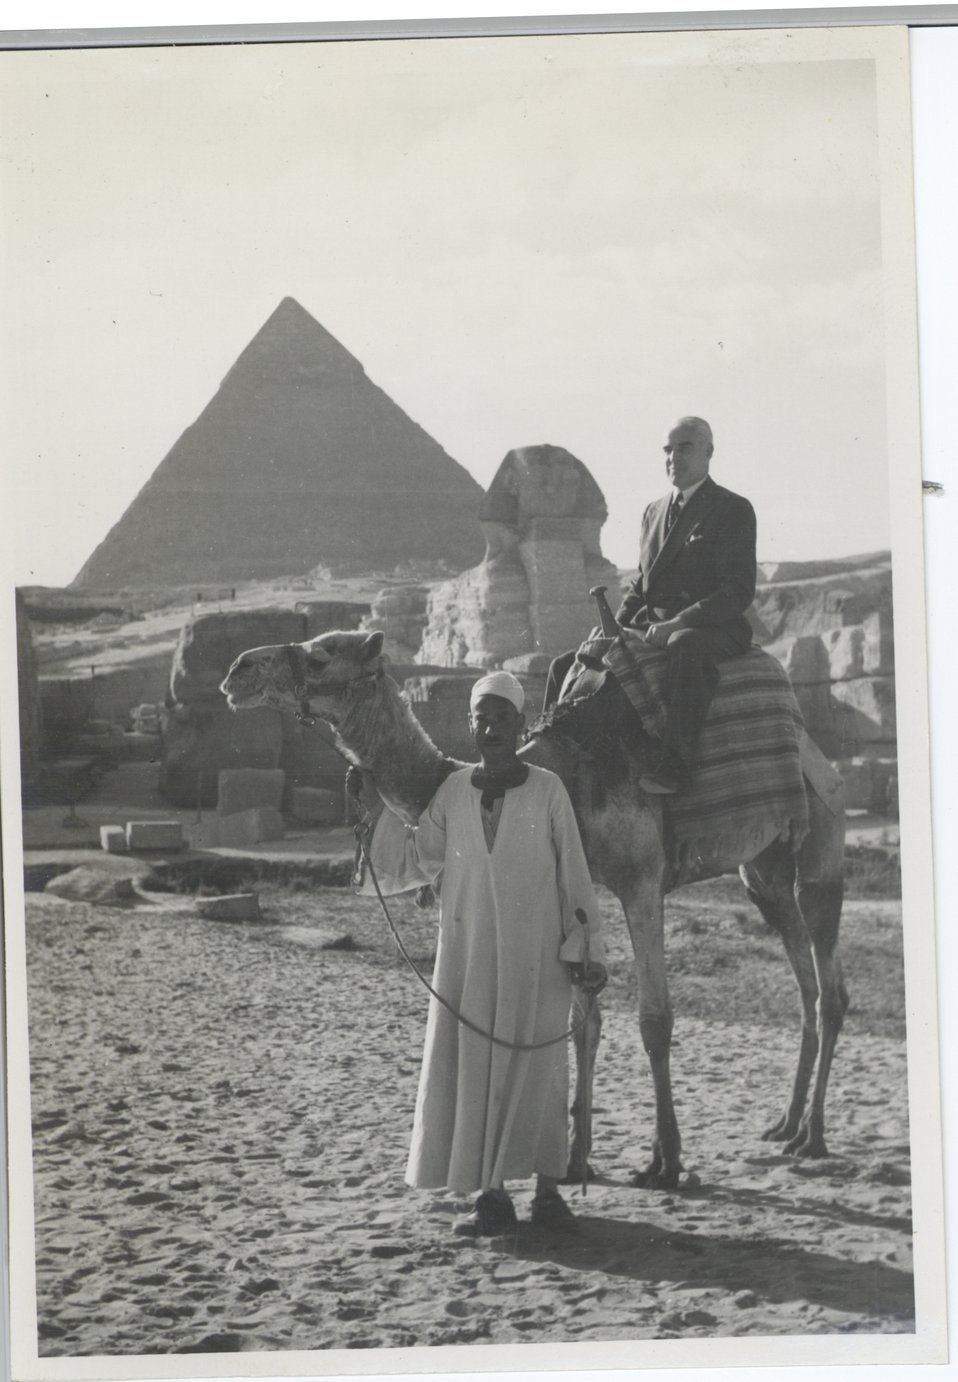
Secretary Stetinnius in Egypt

Secretary of State Edward R. Stettinius on his trip to Egypt.